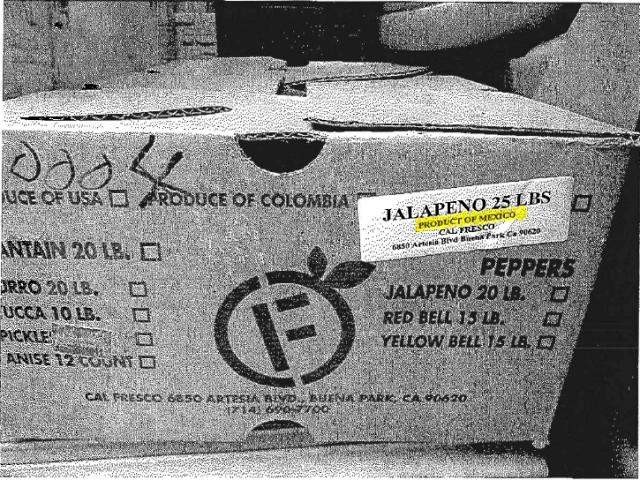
RECALLED - Jalapeño and Serrano chili peppers

December 21, 2011 - Product Recall - Cal Fresco, LLC Recalls Jalapeño and Serrano Chili Peppers Due to Possible Health Risk.